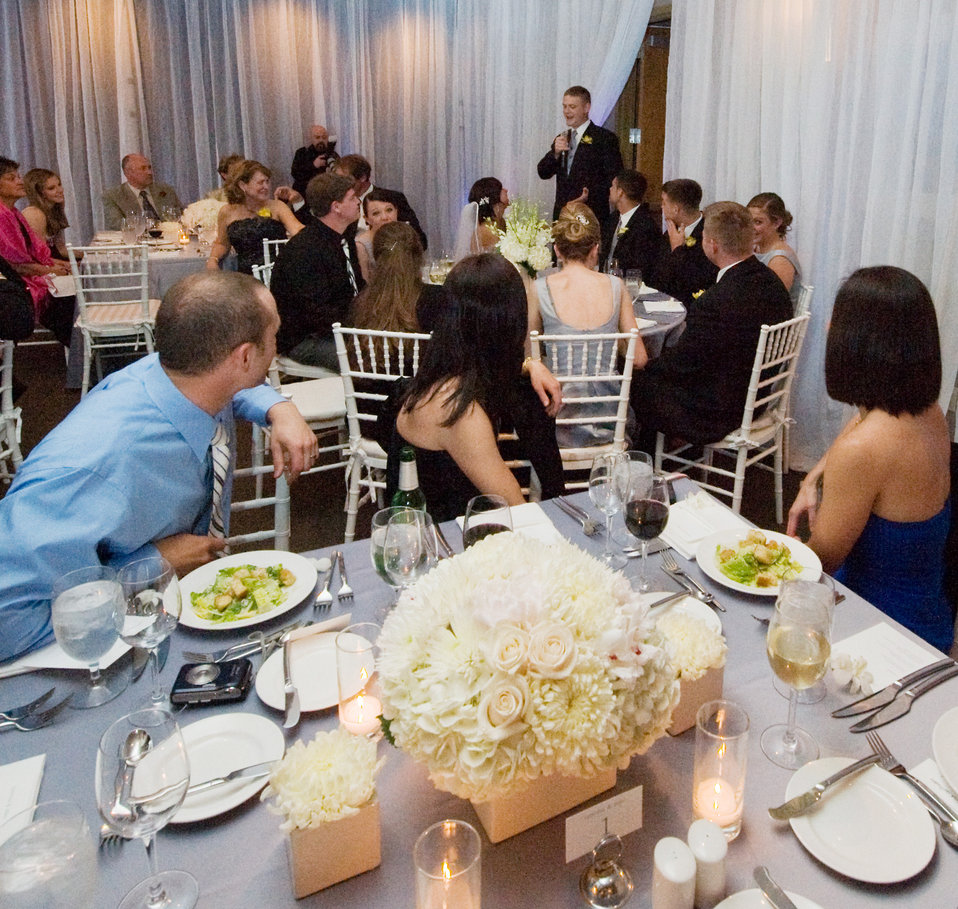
San Francisco Dream Wedding

John Hawkins makes a speech and a toast in honor of Vanessa and Capt. Mike Hawkins' following their wedding on May 14. John and his brother Matt Hawkins are Capt. Hawkins' brothers and best men. The wedding couple won the San Francisco Dream Wedding Giveaway with internet viewer votes. Vanessa was diagnosed with stage IV Hodgkin's Lymphoma. Vendors donated $100,000 of goods and services to the couples wedding day.